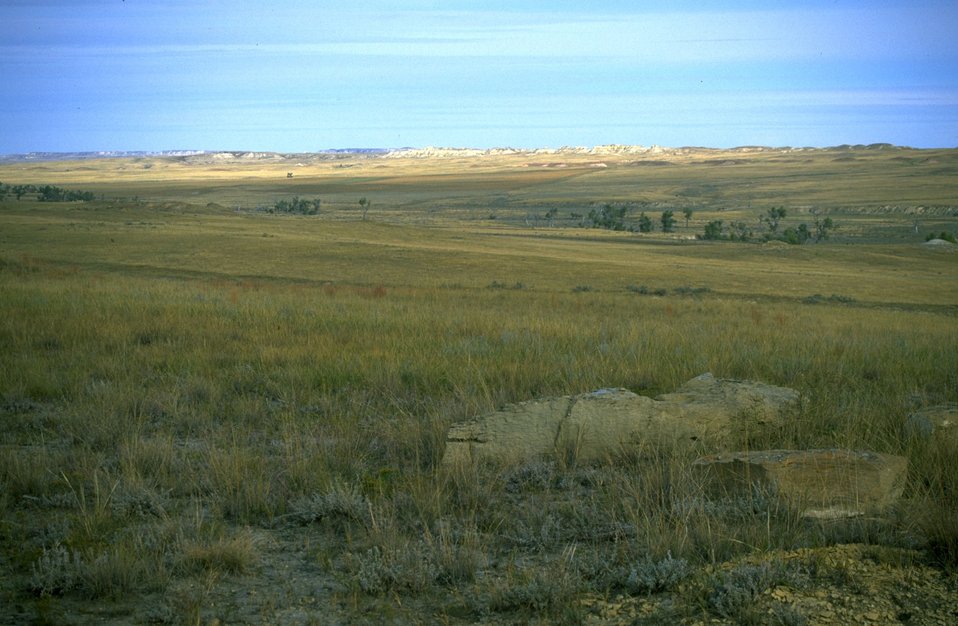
Eastern Montana prairie